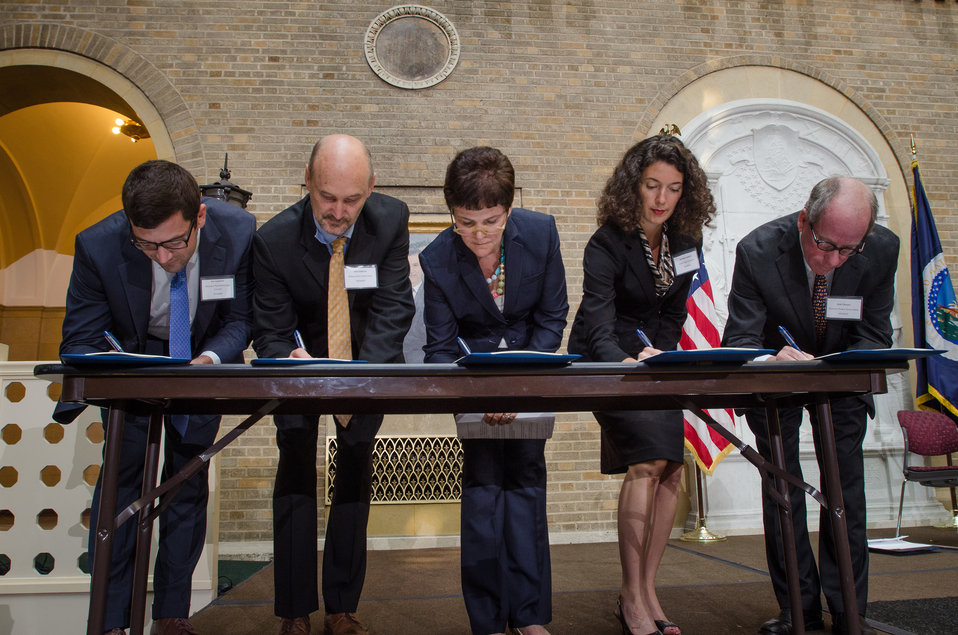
U.S. Department of Agriculture (USDA) Bioenergy Memorandum of Understanding, is signed by wood energy partners (left - right) Biomass Thermal Energy Council, Executive Director Joseph Seymour; Alliance for Green Heat, President John Ackerly, USDA Deputy Agriculture Secretary Krysta Harden; Pellet Fuels Institute Executive, Director Jennifer Hedrick; Biomass Power Association, President and CEO Bob Cleaves, at the USDA Headquarters, in Washington, D.C., on Wednesday, September 11, 2013.
The partnership agreement focuses on promoting wood energy nationwide as a means to address fire risks, bolster rural economic development, improve air quality, and help meet the Obama Administration’s renewable energy and energy efficiency goals. These organizations support the use of wood energy across the scale of users – from residential users, to commercial and intuitional facilities, to industrial production of heat and or electricity to drive businesses and feed the electrical grid.
Under the terms of the five grants announced by Deputy Secretary Harden, private, state and federal organizations will work together to stimulate the development of additional wood energy projects in their states. Collectively, $2.9 million will be spent o this effort -- $1.1 million on federal funds and $1.8 million in non federal funds. For more information o0n the cooperative agreement program, visit na.fs.fed.us.werc/wood-energy/ USDA Photo by Lance Cheung.